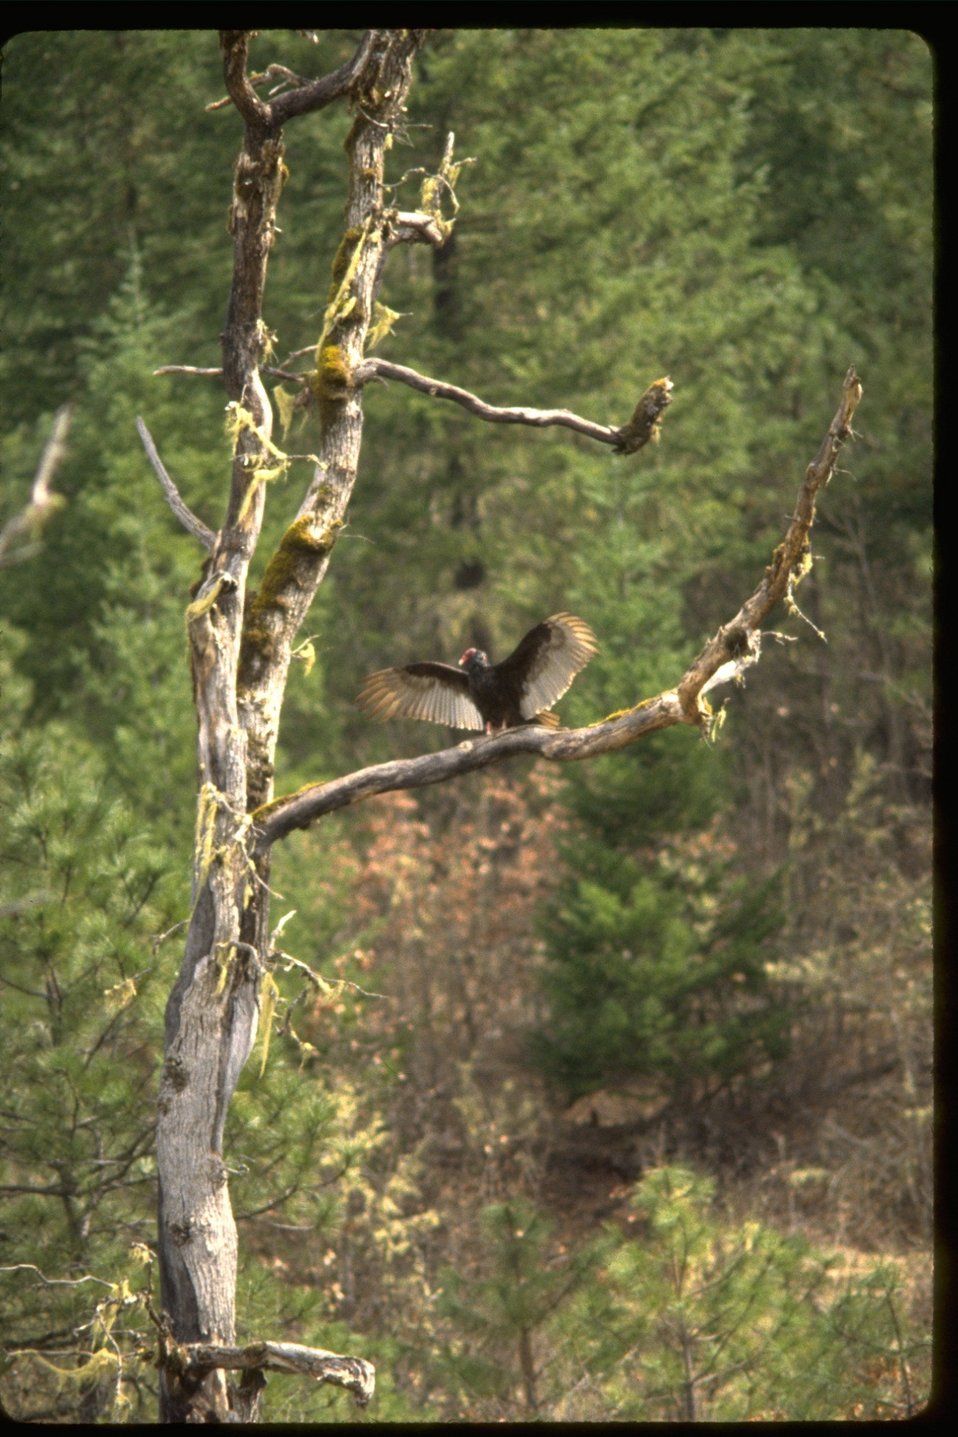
Turkey Vulture preparing for flight from dead tree.